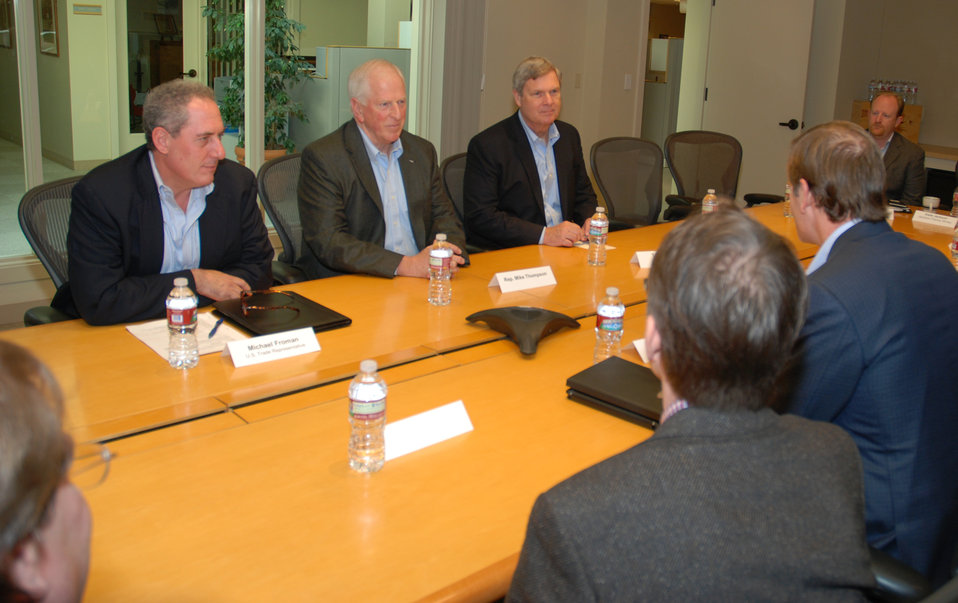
(L to R) U.S. Trade Representative Michael Froman, Congressman (CA) Mike Thompson, and Agriculture Secretary Thomas Vilsack hold a roundtable discussion with California wine growers Mondavi Winery in Napa, CA on Sunday, Nov. 17, 2013.